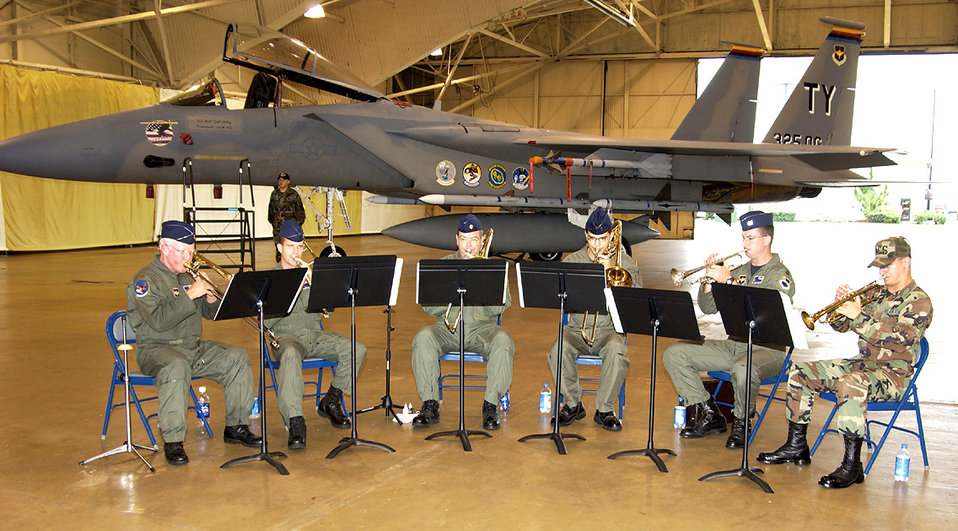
Band of brothers: Tyndall musicians bring 'brass' to base ceremonies

TYNDALL AIR FORCE BASE, Fla. -- The Brass Band plays at the 325th Operations Group change of command ceremony recently. The band members are (from left) Maj. John Evans, Capt. Lee Wilstead, Maj. Raymond Law, 2nd Lt. Steven Vega, Capt. Chris Comer and Airman 1st Class Brandon Schessl.